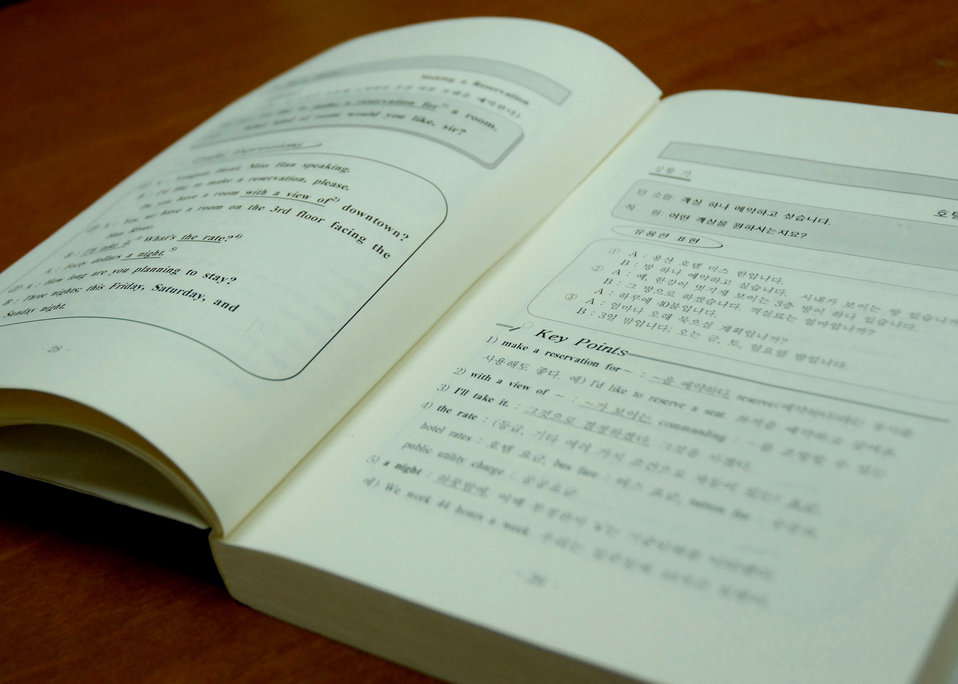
Kunsan Airmen teach English to South Korean cadets

A textbook used to teach South Korean army cadets English lays on a desk Jan. 31 at Kunsan Air Base, South Korea. Numerous Airmen from the 5/6 group volunteer to teach assist South Korean army cadets English.